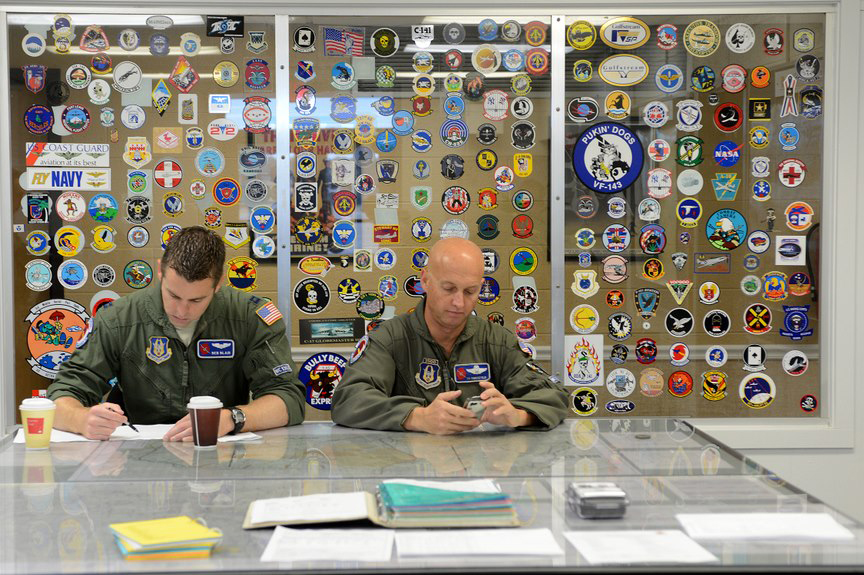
Hurricane Sandy

Capt. Ben Blair (left) and Lt. Col. Ty Piercefield, from the 53rd Weather Reconnaissance Squadron, prepare for a weather reconnaissance mission Oct. 29, 2012, at Hunter Army Airfield, Ga. The 53rd WRS conducted weather reconnaissance missions in preparation for Hurricane Sandy making landfall along the Eastern coastline of the United States.